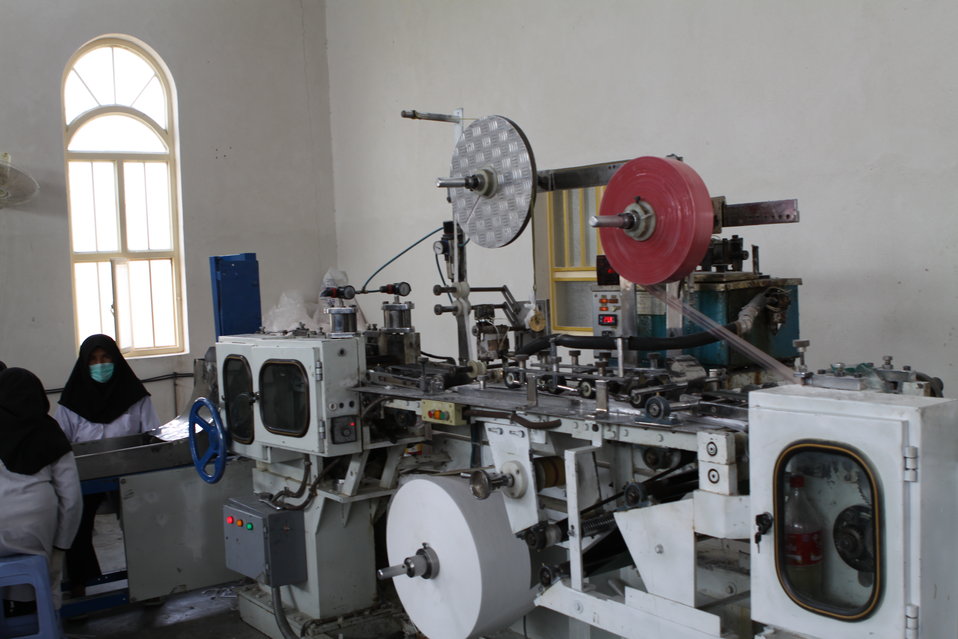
100525 Hirat Marble Conference 807